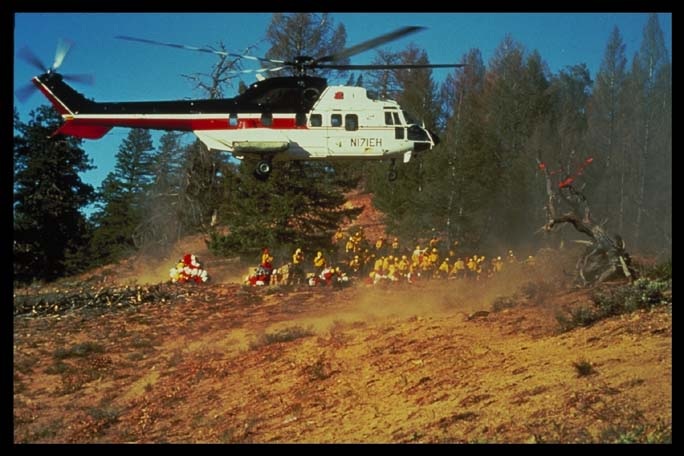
Helicopter